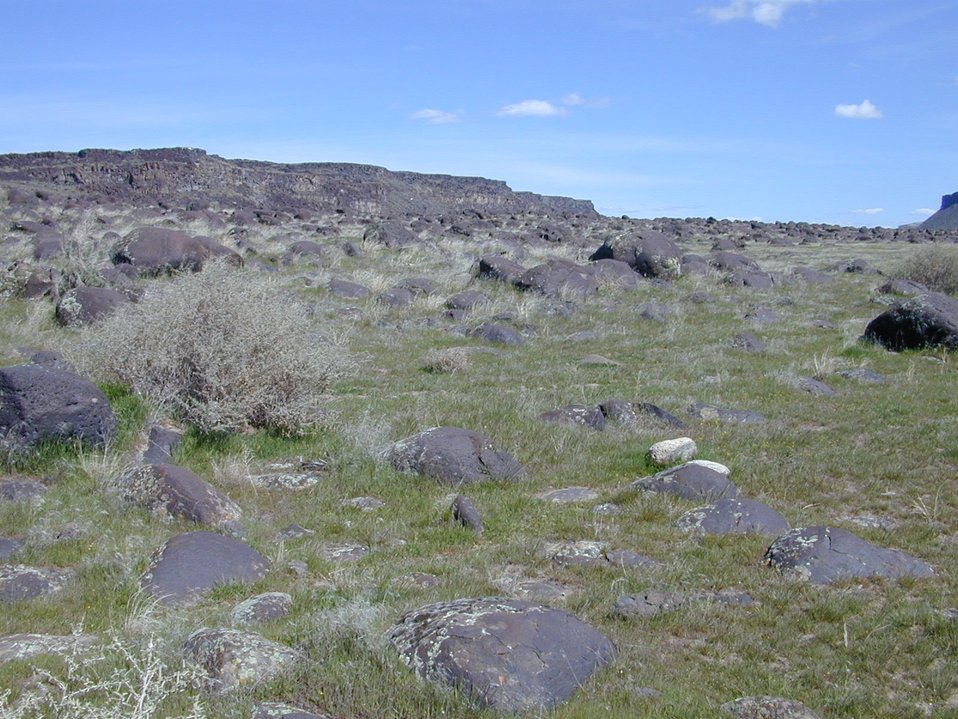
Snake River Birds of Prey National Conservation Area Lower Snake River District LSRD Snake River Canyon